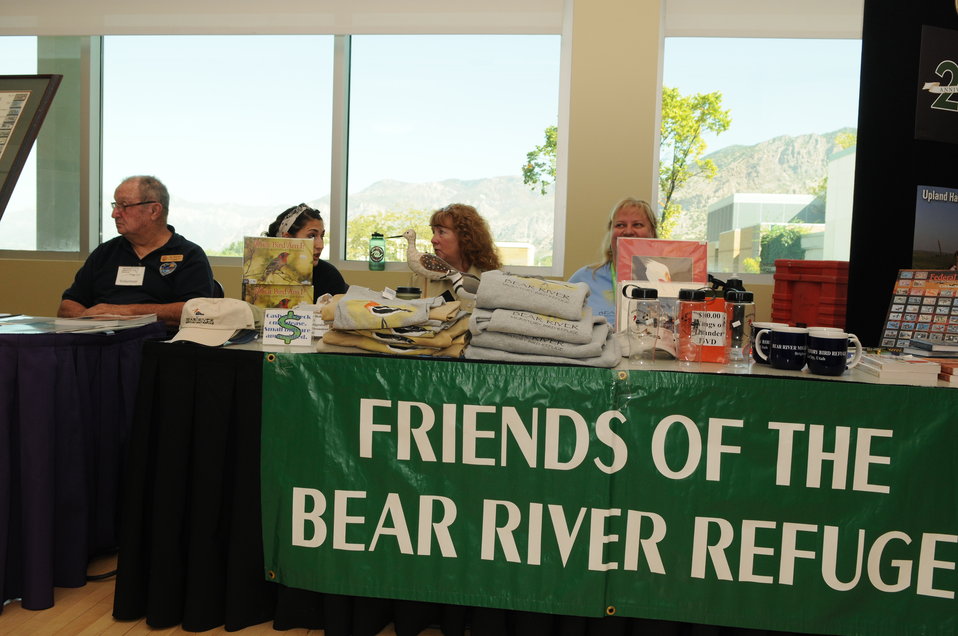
Youth Outreach

The U.S. Fish & Wildlife Service sponsored the 2012 Federal Duck Stamp Art Contest September 28 and 29 in Ogden, Utah, at Weber State University. A panel of five judges was responsible for choosing the art work used to design the 2013-2014 Migratory Bird Hunting and Conservation Stamp.